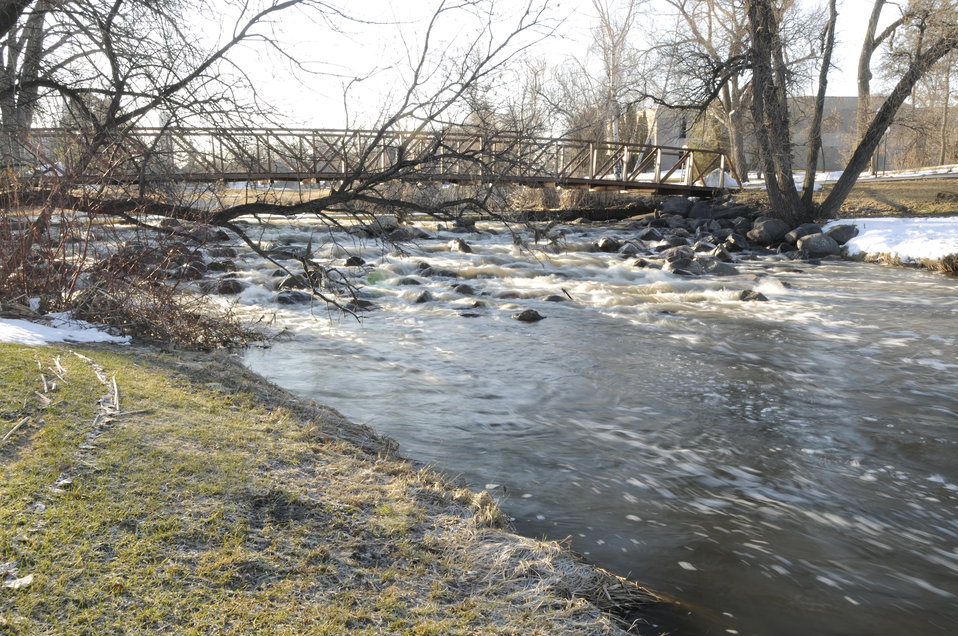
Farmland was under water in North Dakota on April 8, 2009 due to the Red and Missouri Rivers overflowing their banks. North Dakota received abnormally heavy winter snows atop saturated and frozen ground, which was already saturated when it froze at the beginning of winter, melting snow which could not be absorbed by the frozen ground, additional precipitation from a rain storm on March 22, 2009 and a late snowstorm at the end of the month added to the existing snowpack.